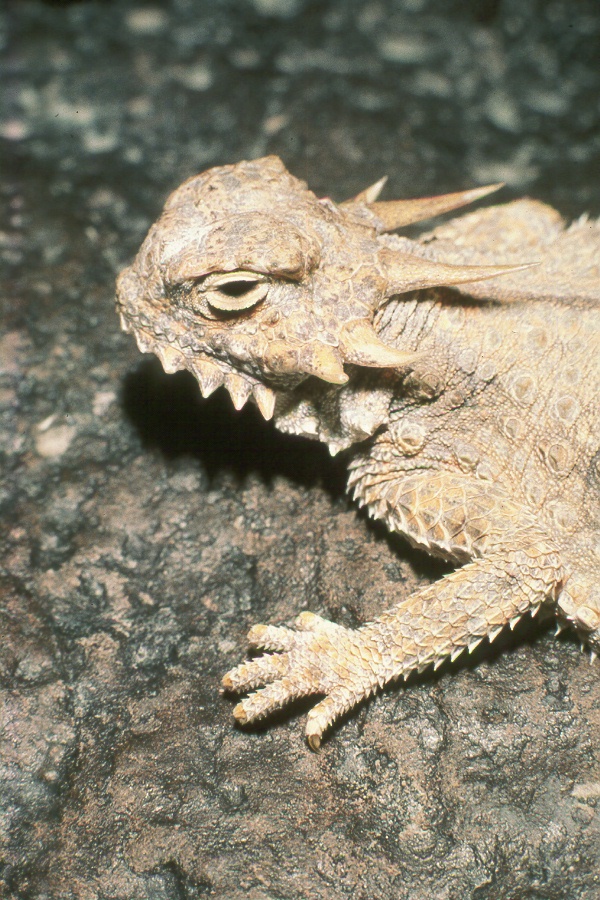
Flat-tailed horned lizard 02

Jim Rorabaugh/USFWS)